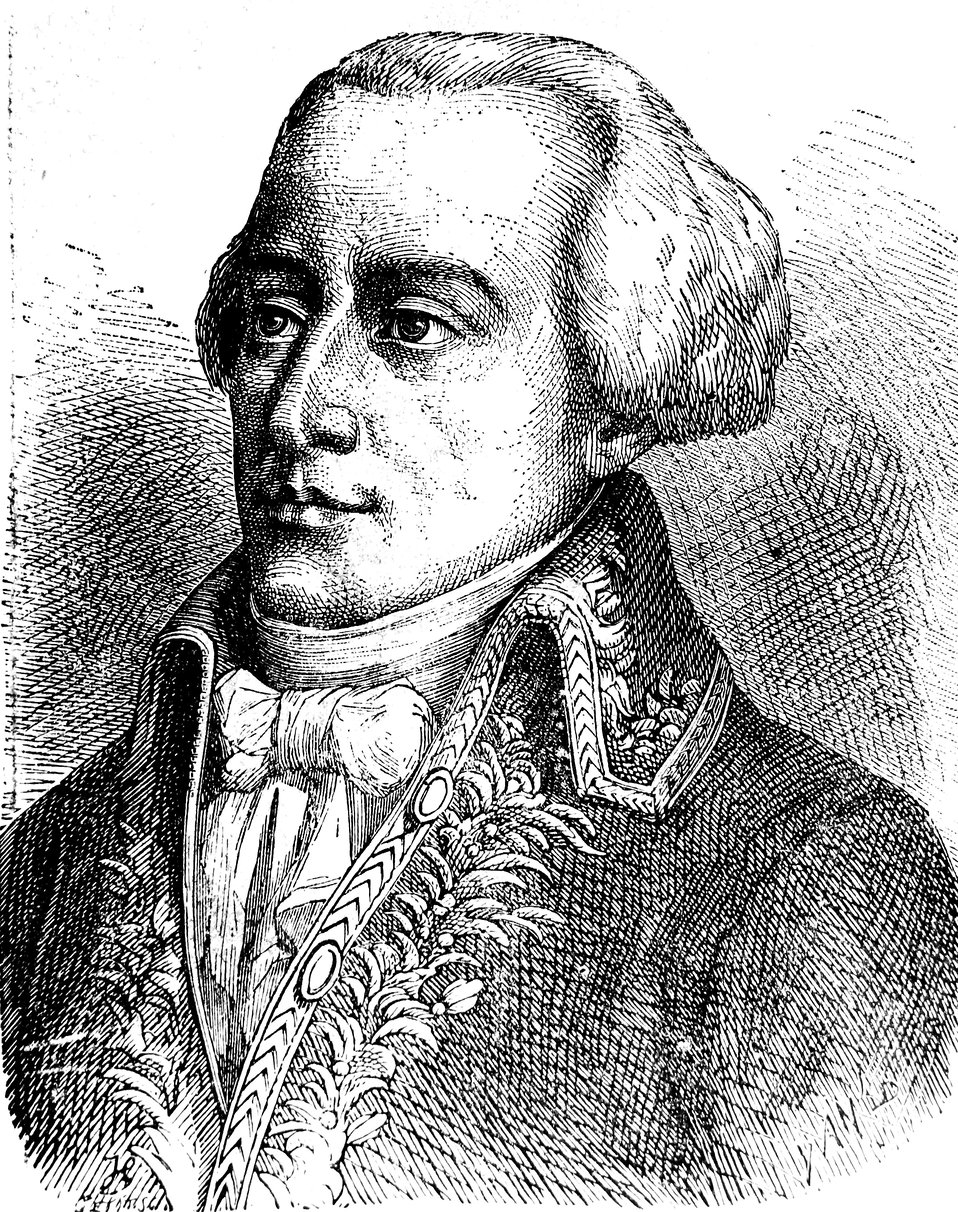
AduC 259 Petiet (Claude, 1749-1806)